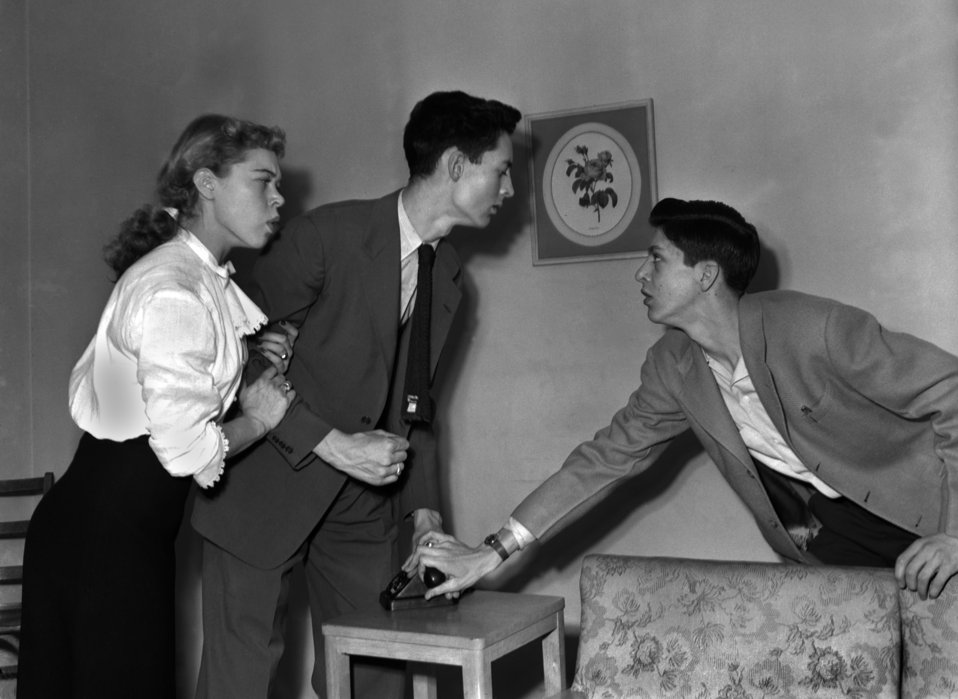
High School Play 'One of Us'

004266-4 DOE photo Ed Westcott
Oak Ridge Tennessee 1-23-1948